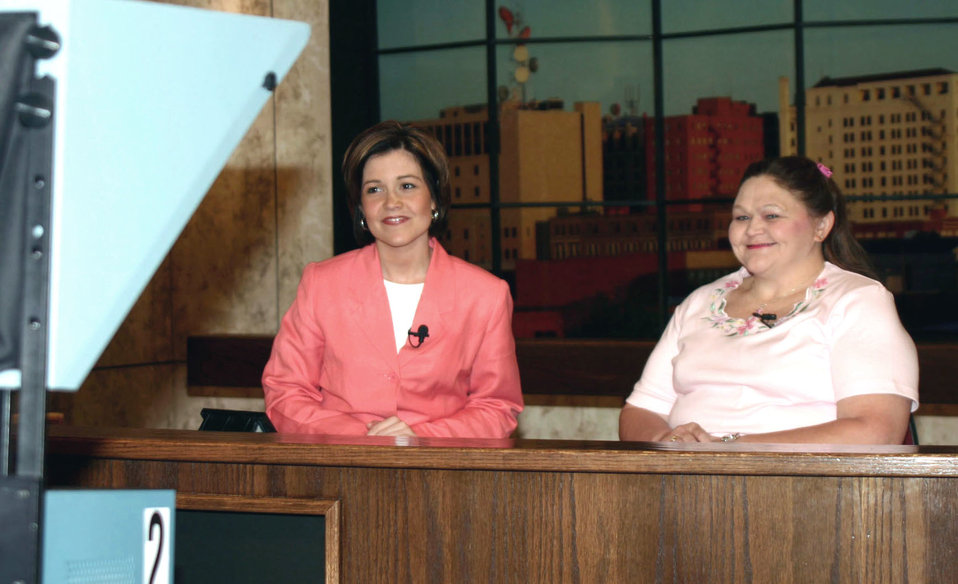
Swapping jobs

WICHITA FALLS, Texas -- Rachel Wheat (left), host for the local news'